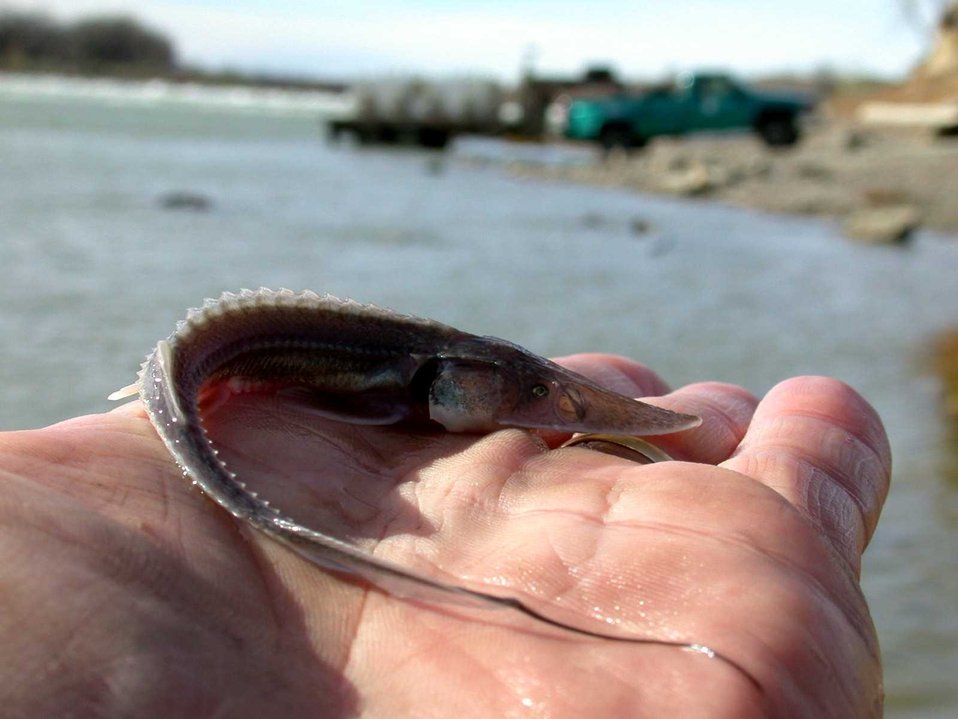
Juvenile Pallid Sturgeon in Palm

Pallid released in Yellowstone river. A record number of juvenile pallid sturgeon produced at Garrison Dam, Gavins Point NFH & state fish hatcheries in 2007-2009, have succeeded in re-establishing a viable population in a major portion of the species' native range.